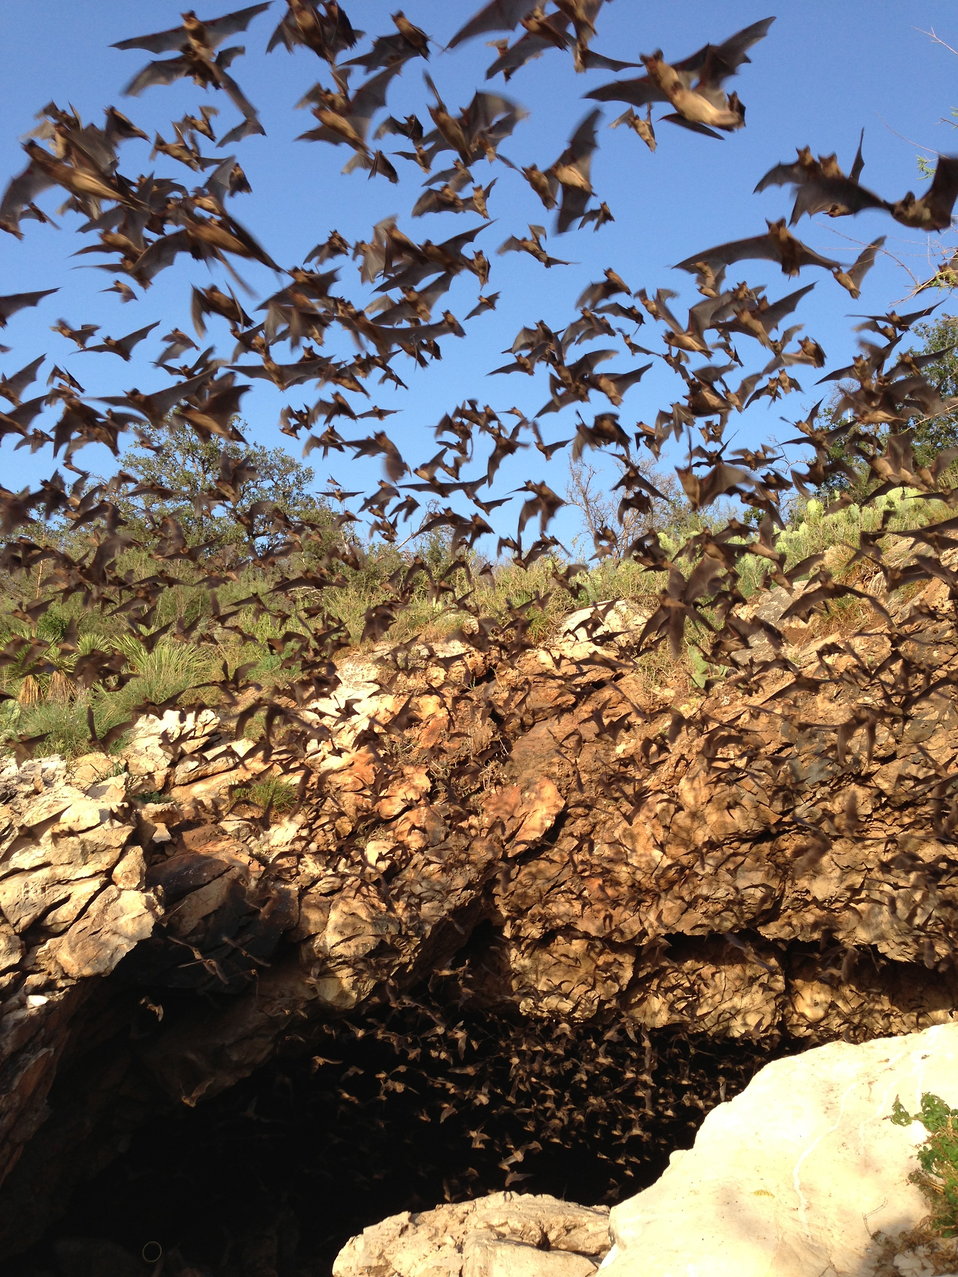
Bats emerging from Davis Cave